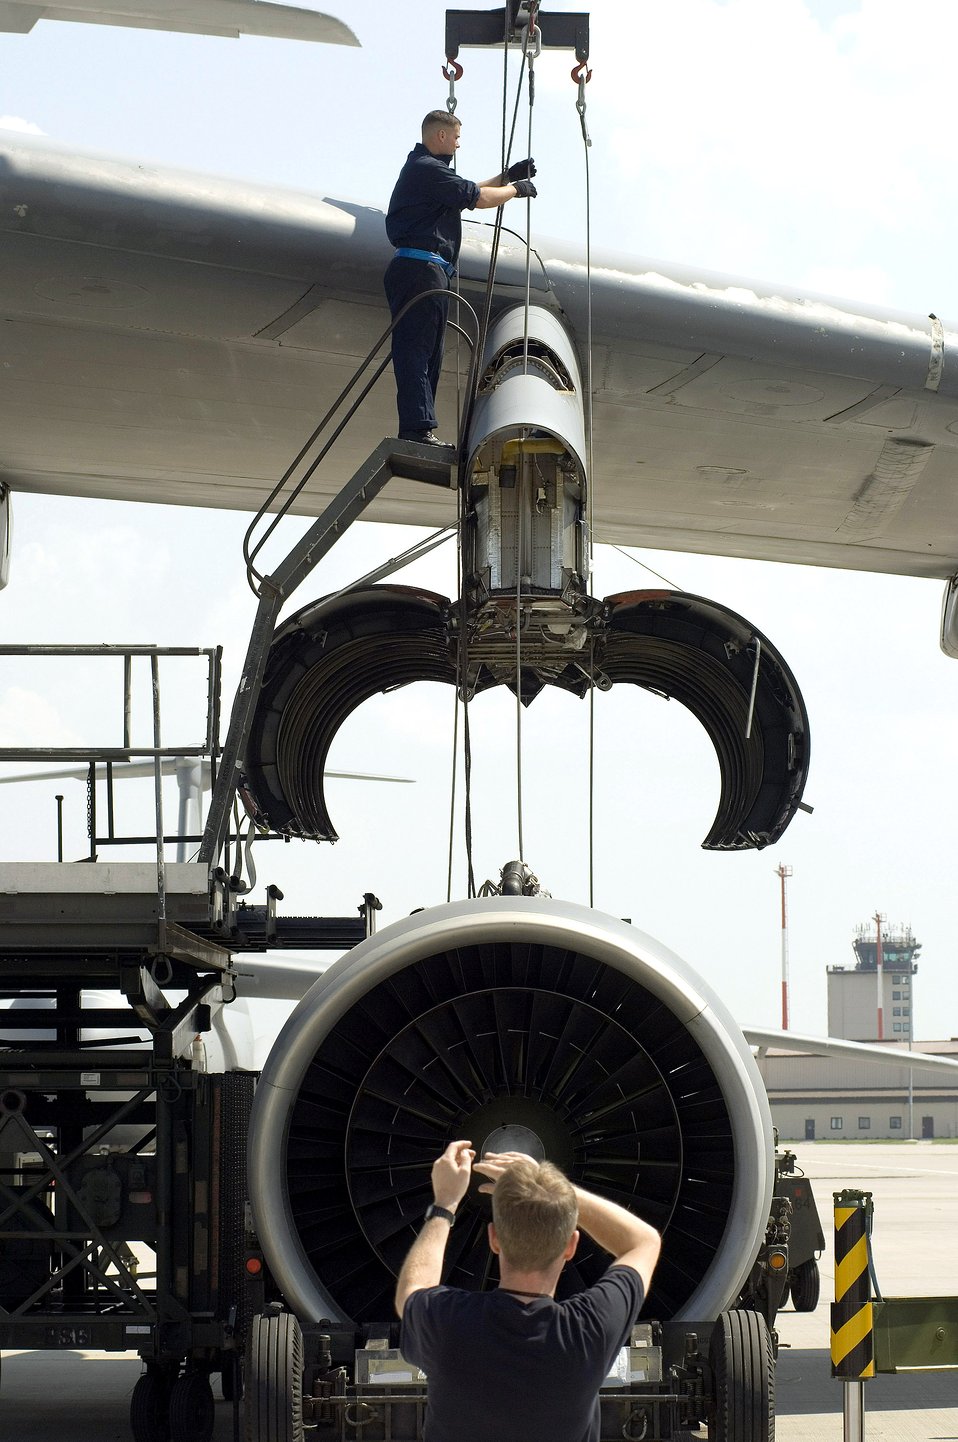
Maintainers keep C-5s flying

Staff Sgt. Sean Donovan (top) centers cables while preparing to mount an engine on a C-5 Galaxy on Friday, May 12, 2006, at Ramstein Air Base, Germany. Sergeant Donovan is a jet engine mechanic assigned to the 723rd Air Mobility Squadron.